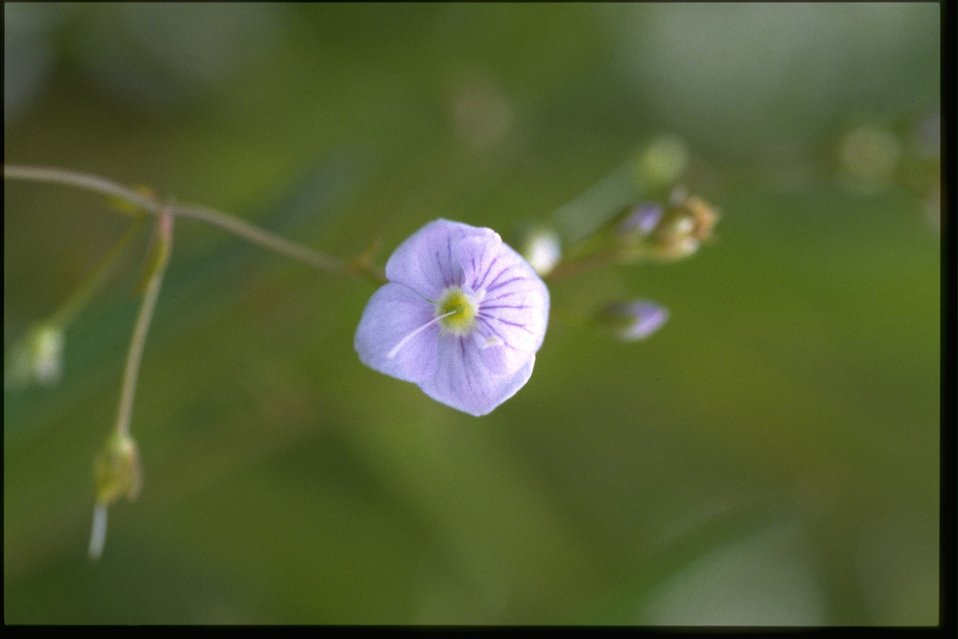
Medium shot of wildflower (genus Veronica).